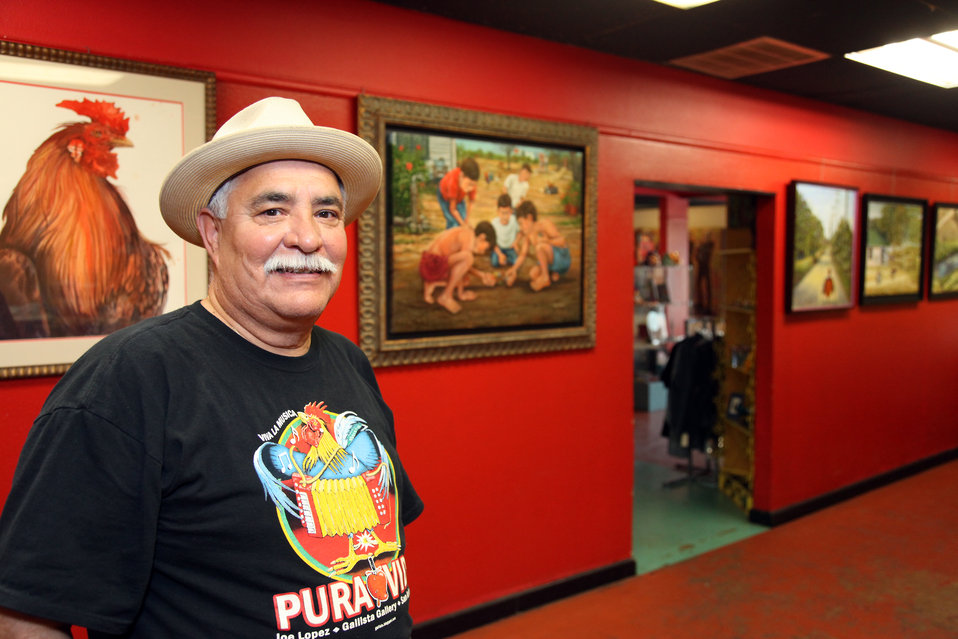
Gallista Gallery

Joe Lopez, artist and owner of the Gallista Gallery, received energy and money-saving lights through the City Lights program. “We compared our bills to last year and we have seen a decrease...They should have more programs like this... Small businesses need help. We struggle as a small business, every little bit helps.”